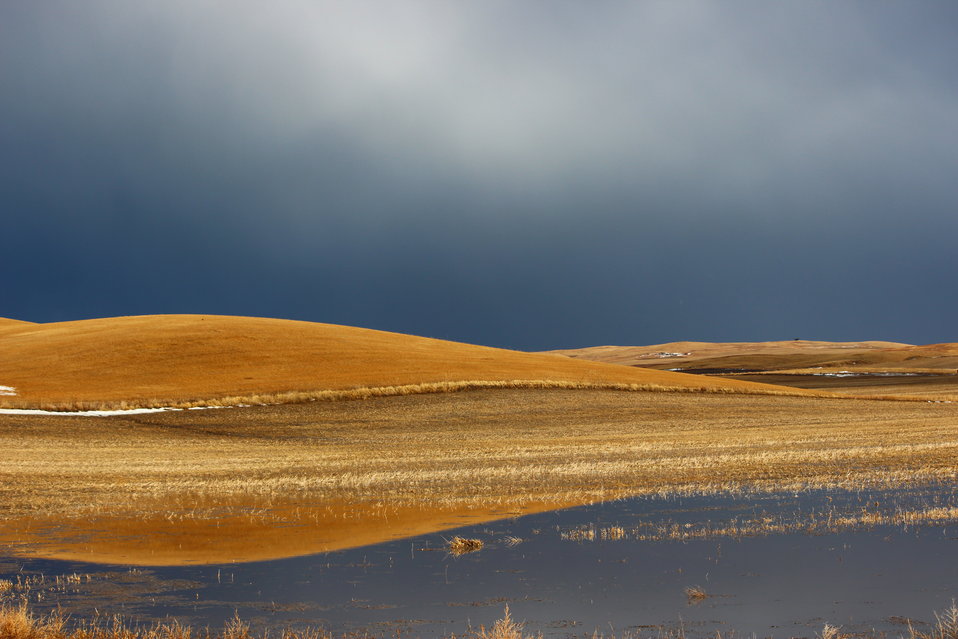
Reflections

April snow melt and rains fill many ephemeral and temporary wetlands in the spring. This field is farmed later in the year, but its still waters created the perfect mirror image on April 6th, 2014.